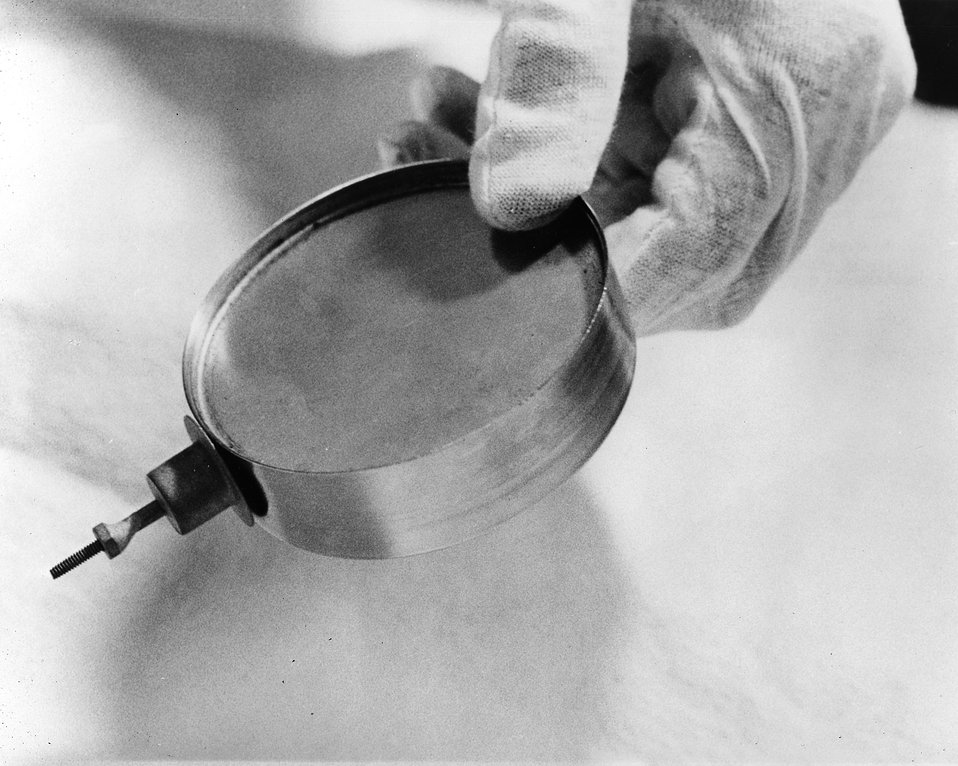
A lab test version of the lithium-sulphur storage cell under development at the U.S. AEC Argonne Lab.
c.1972